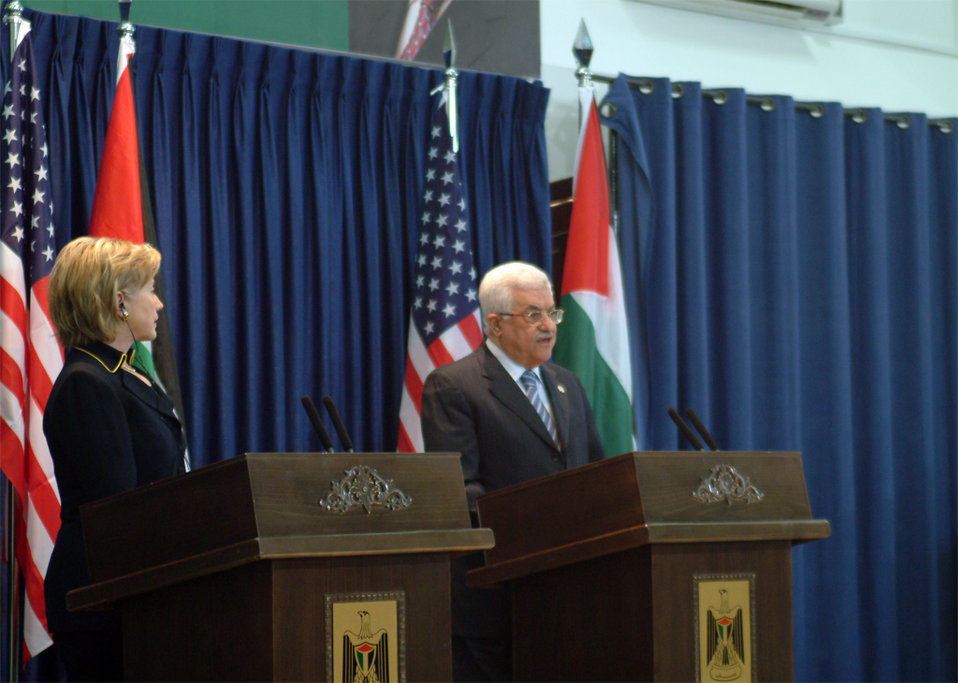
Secretary Clinton With Palestinian Authority President

Secretary Clinton at a press conference with Palestinian Authority President Mahmoud Abbas in Ramallah March 4, 2009.